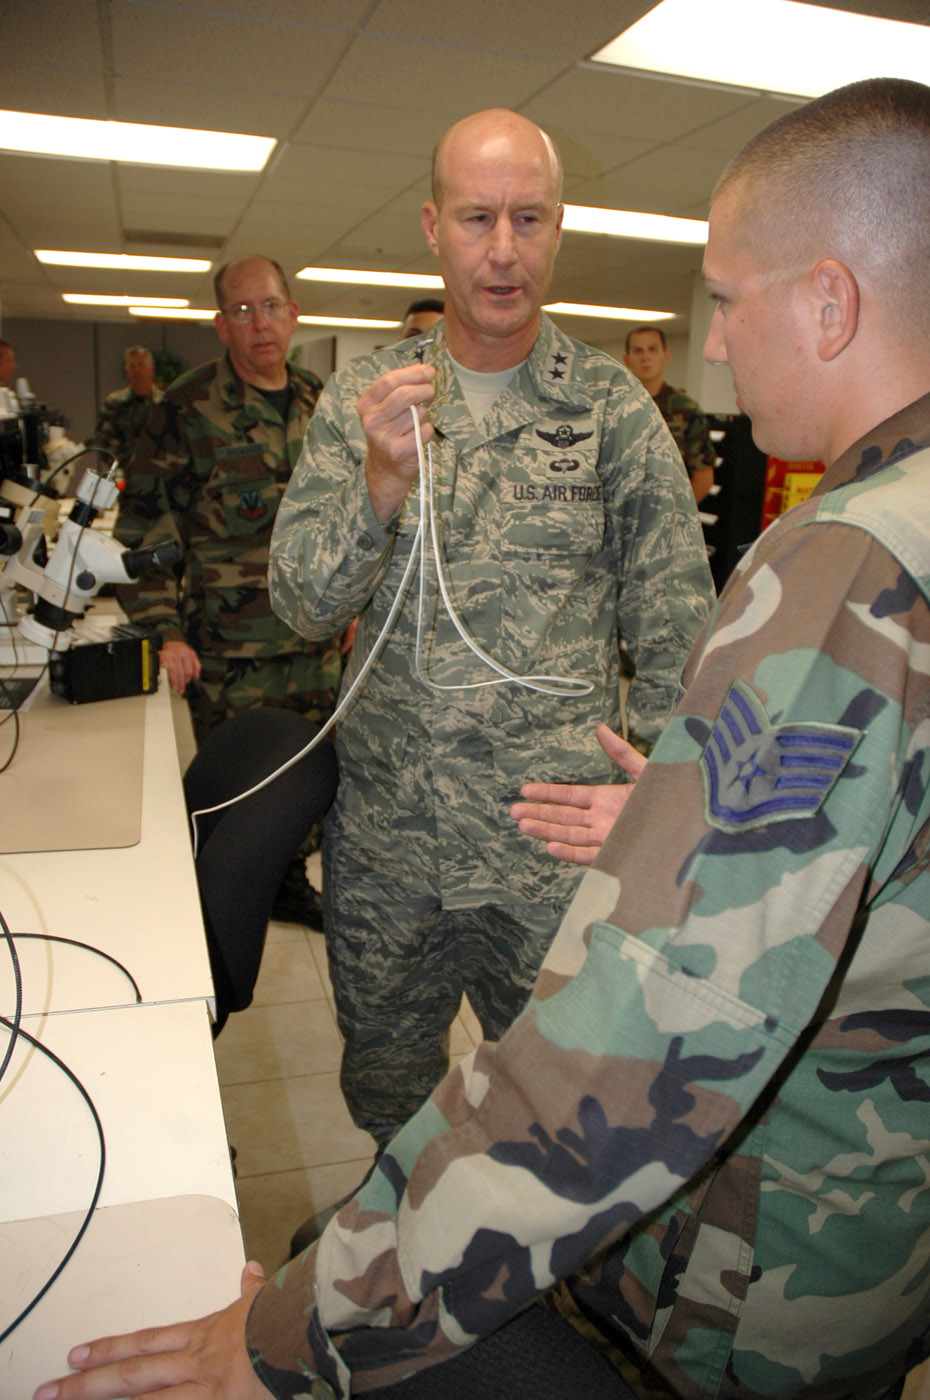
Maintenance wizards: 'We can fix anything'

Staff Sgt. Robert Brutto briefs Maj. Gen. Douglas Raaberg on some of the techniques he and his fellow Air Force Repair Enhancement Program Airmen use to quickly repair critical aircraft parts on-site rather than send them to a depot for repair. Sergeant Brutto is an AFREP technician in the 355th Maintenance Group at Davis-Monthan Air Force Base, Ariz. General Raaberg, the director of air and space operations at Headquarters Air Combat Command, Langley Air Force Base, Va., was visiting the base and made time to stop by the AFREP shop.